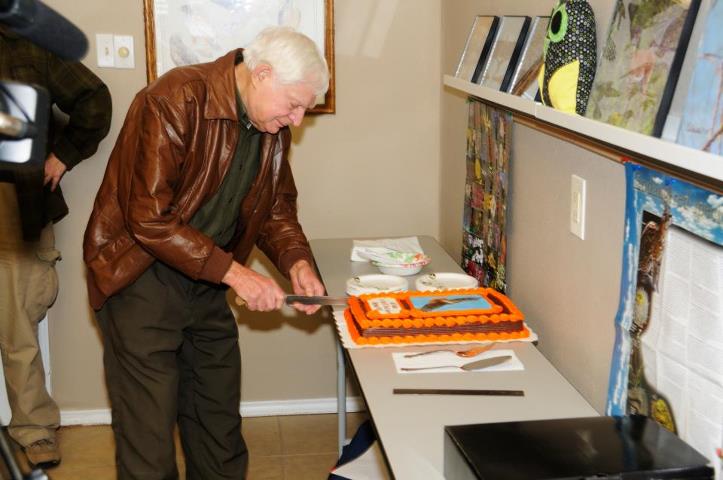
Karl Haller and cake

Karl Haller cuts the cake served in his honor at Hagerman Refuge in spring 2013.